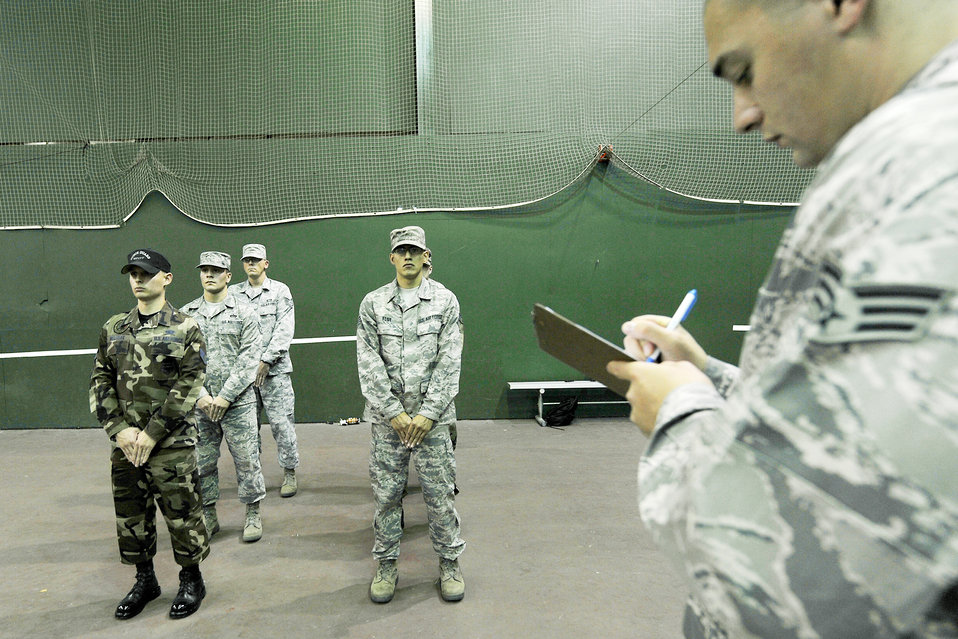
Looking sharp

Senior Airman Noel Sweeney evaluates base honor guard members on their ability to stand at parade rest for an extended period of time during a training session Oct. 21, 2009, at Offutt Air Force Base, Neb. Air Force Honor Guard trainers visited the base to evaluate and help sharpen the skills of base honor guard members. Airmen Sweeny is an Air Force Honor Guard member.